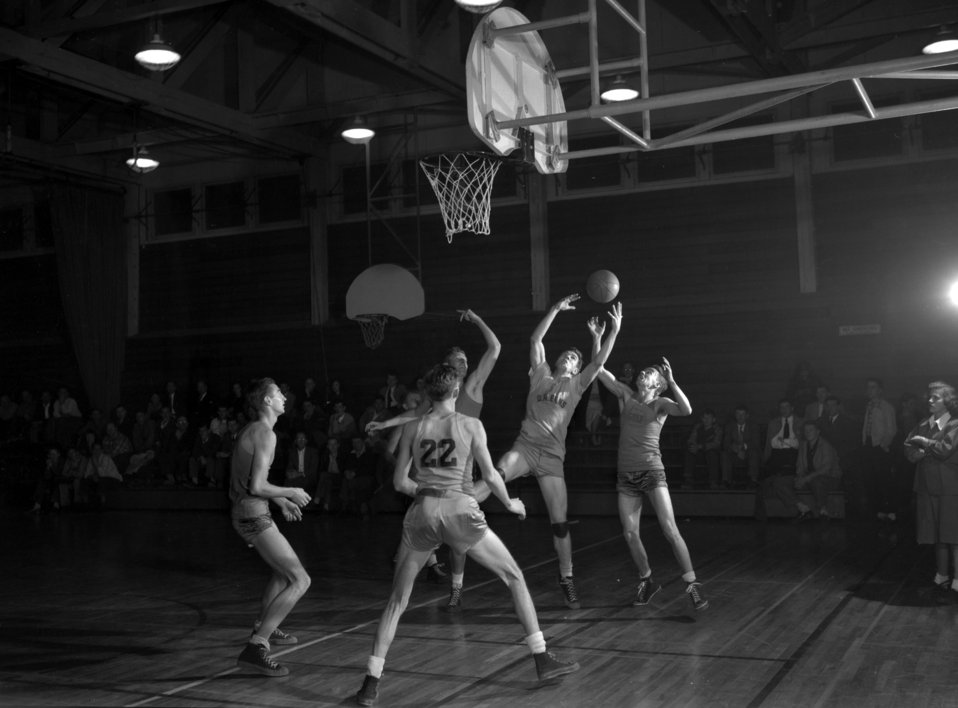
Basketball Elks Club

4166-10b DOE photo Ed Westcott

Maryville Tennessee 12-28-1947